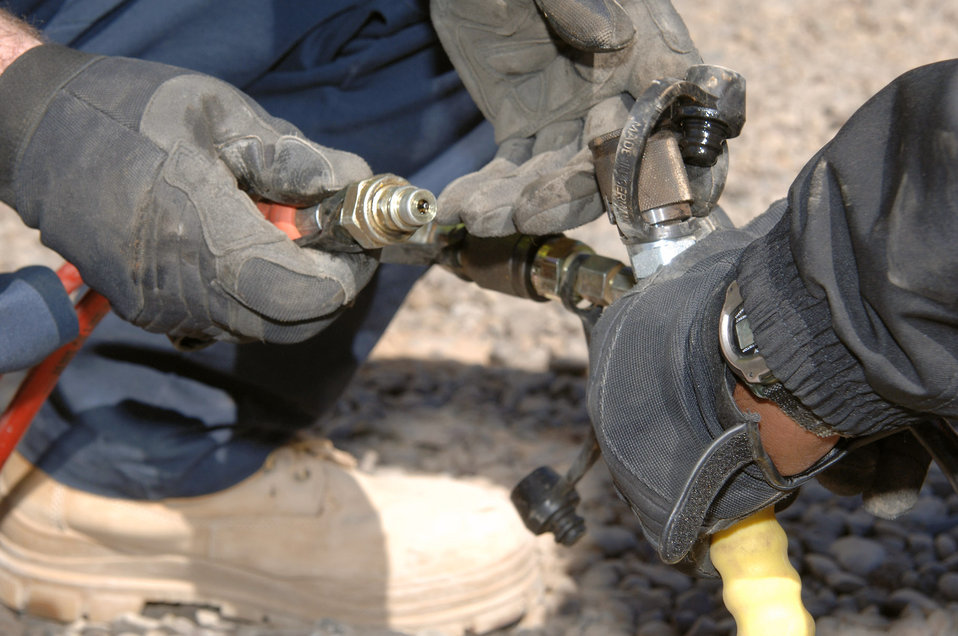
Balad Airmen teach contractors lifesaving skills

Senior mechanic contractors who work for KBR Theater Transportation Mission Recovery secure a hydraulic line to a tool during a refresher training session on using Jaws of Life-type tools March 5 at Balad Air Base, Iraq. The class was led by Airmen assigned to the 332nd Expeditionary Civil Engineer Squadron Fire Department. The senior mechanics are responsible for retrieving stuck, broken down and destroyed military vehicles throughout Iraq.